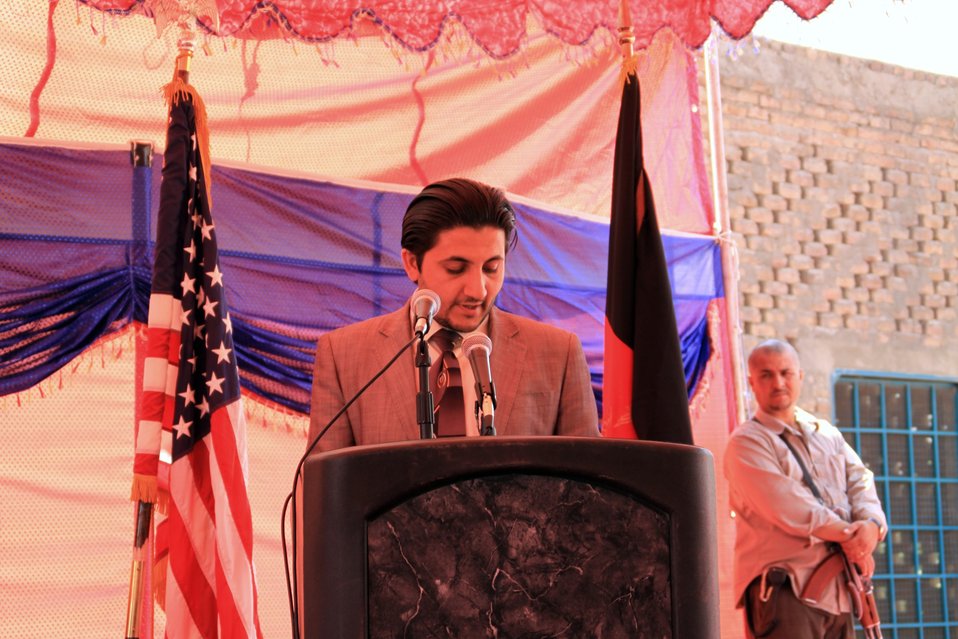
Badam Bagh Farm